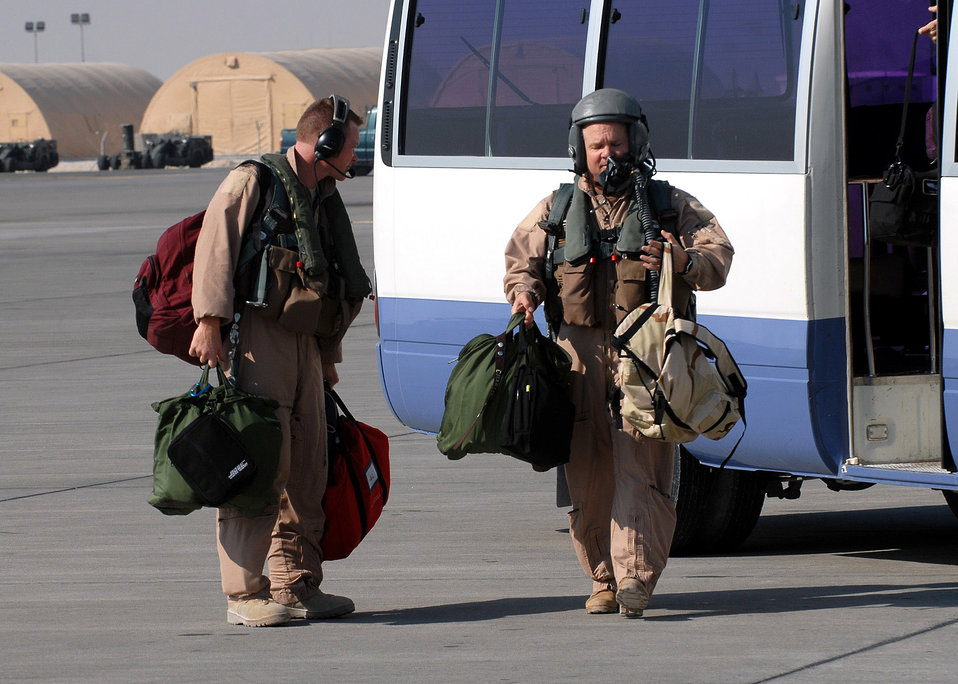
Getting a B-1B ready to launch

1st Lt. Thomas Walsh (left) and Brig. Gen. Charlie Lyon leave the crew bus Dec. 29 to board a B-1B Lancer bomber for a mission. General Lyon is the 379th Air Expeditionary Wing commander and Lieutenant Walsh is an aircrew member with the 9th Expeditionary Bomb Squadron at an air base in Southwest Asia.